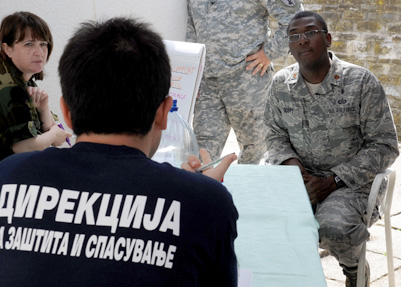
MEDCEUR 11

Maj. Alvin Scott teaches students from multinational partners June 8, 2011, in Macedonia, as part of the 2011 Medical Training Exercise in Central and Eastern Europe. MEDCEUR 11 is an annual, regional and multilateral exercise sponsored by the Chairman of the Joint Chiefs of Staff. Major Scott is the U.S. Northern Command liaison officer to the U.S. Transportation Command Surgeon General and a Defense Institute for Medical Operations instructor.